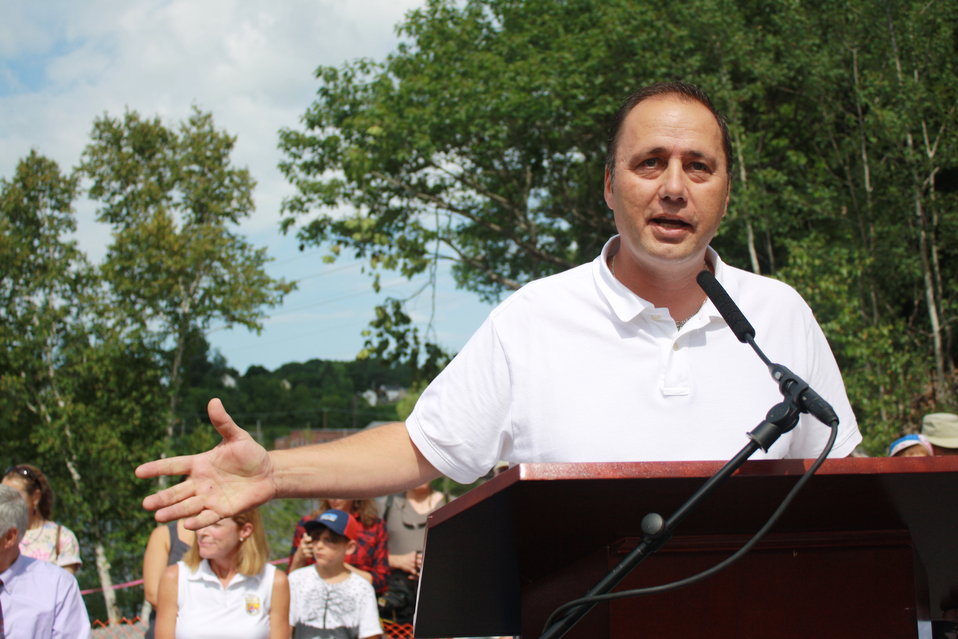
Veazie Dam Removal

Penobscot Indian Nation Chief Kirk Francis.